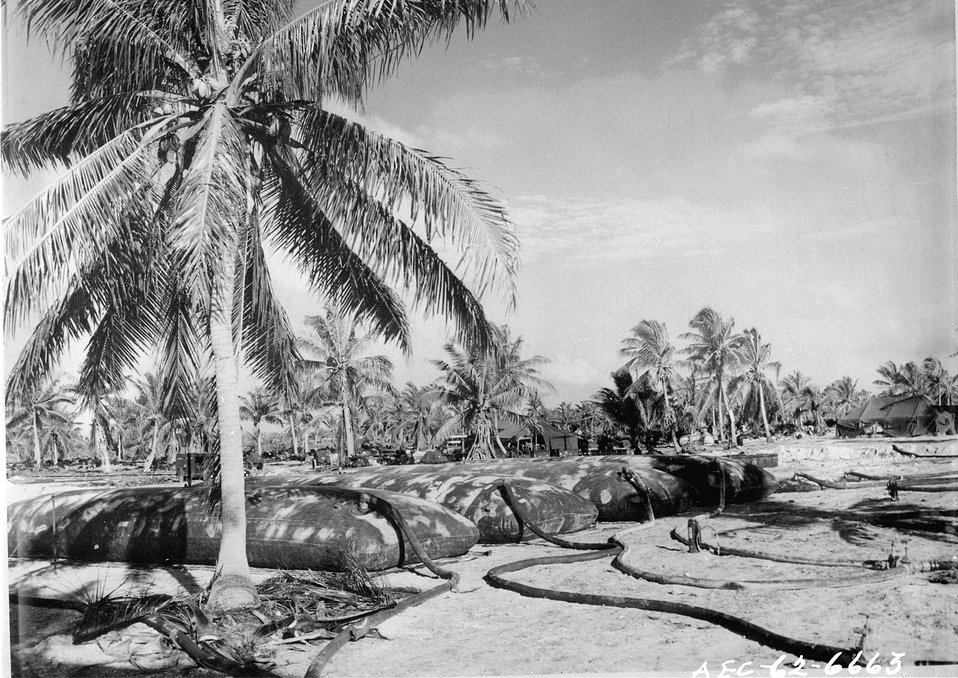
Christmas Island